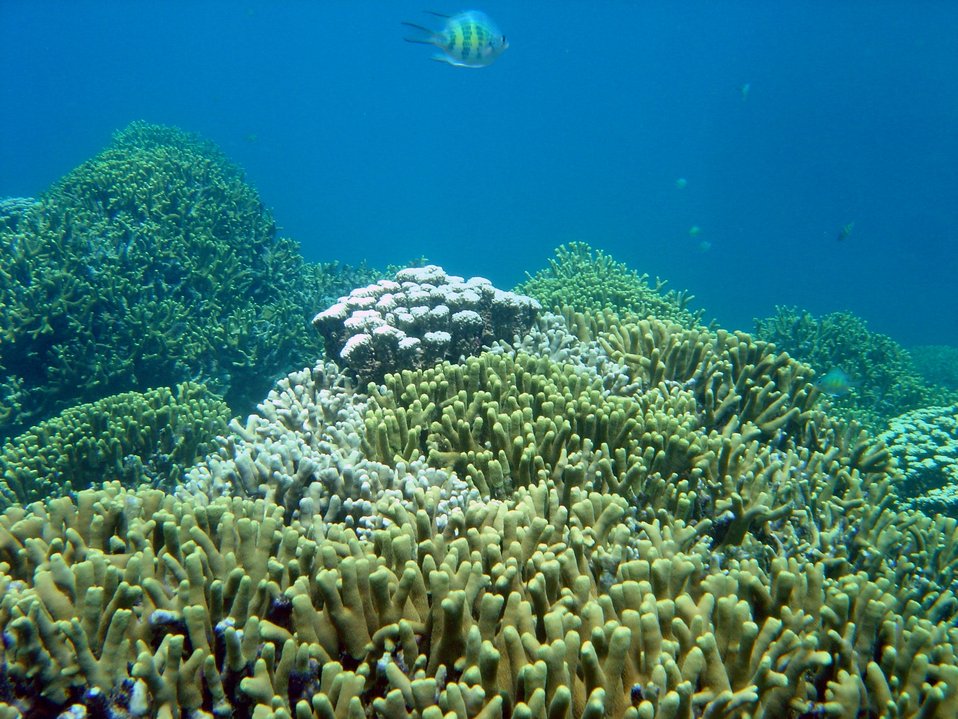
Staghorn damsel above the reef (Amblyglyphidodon curacao)